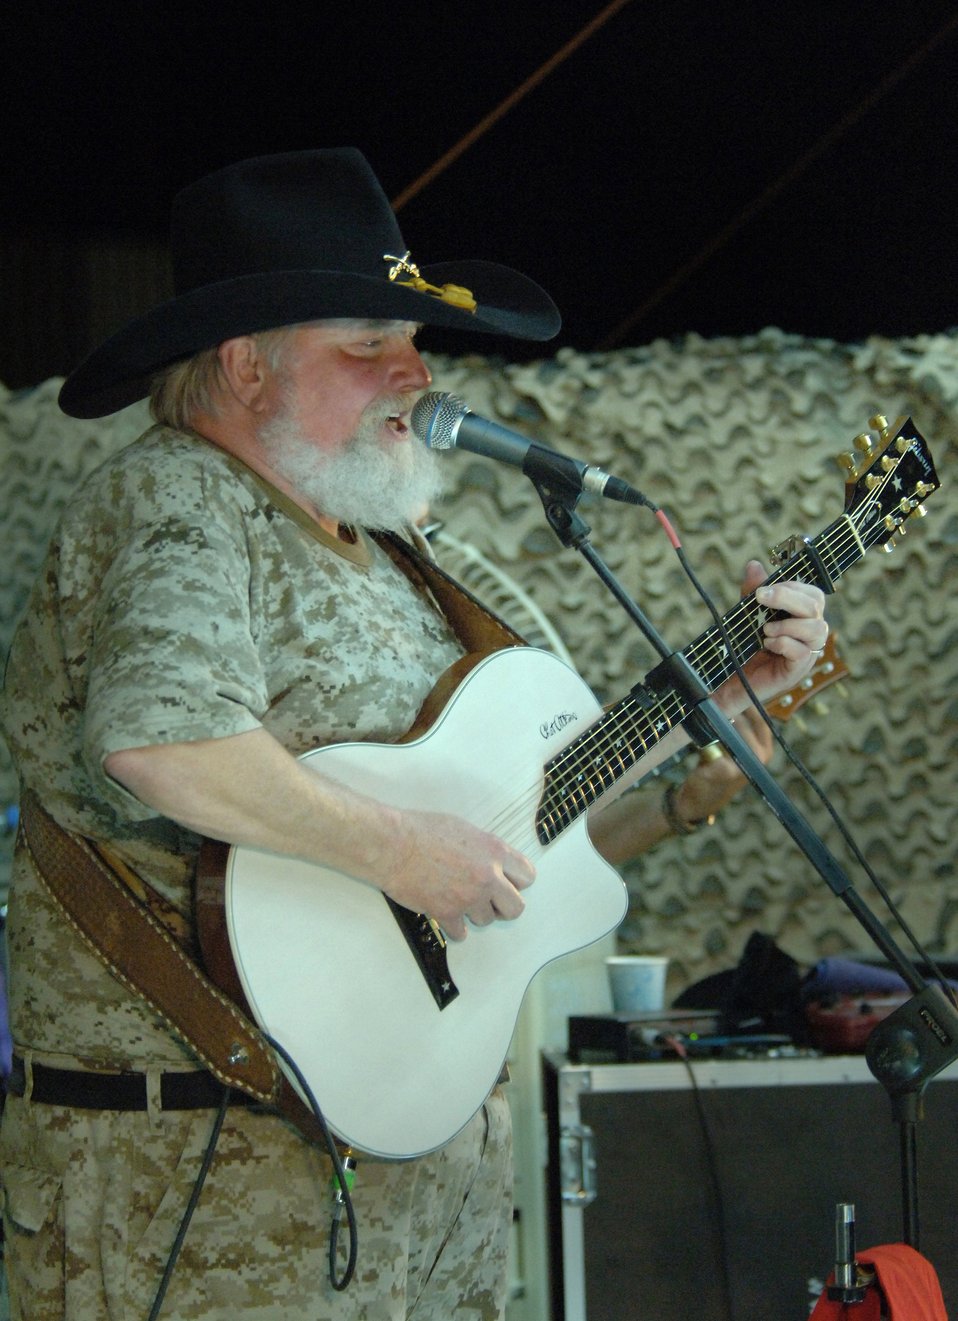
Charlie Daniels entertains the troops

The Charlie Daniels Band plays for servicemembers at Ali Base, Iraq, on Saturday, April 15, 2006, as part of Stars for Stripes, a nonprofit organization which works with Armed Forces Entertainment and U.S. Army Europe Morale, Welfare and Recreation to bring celebrity entertainment to remote sites. The Charlie Daniels Band has been entertaining U.S. military troops around the world for more than 35 years.